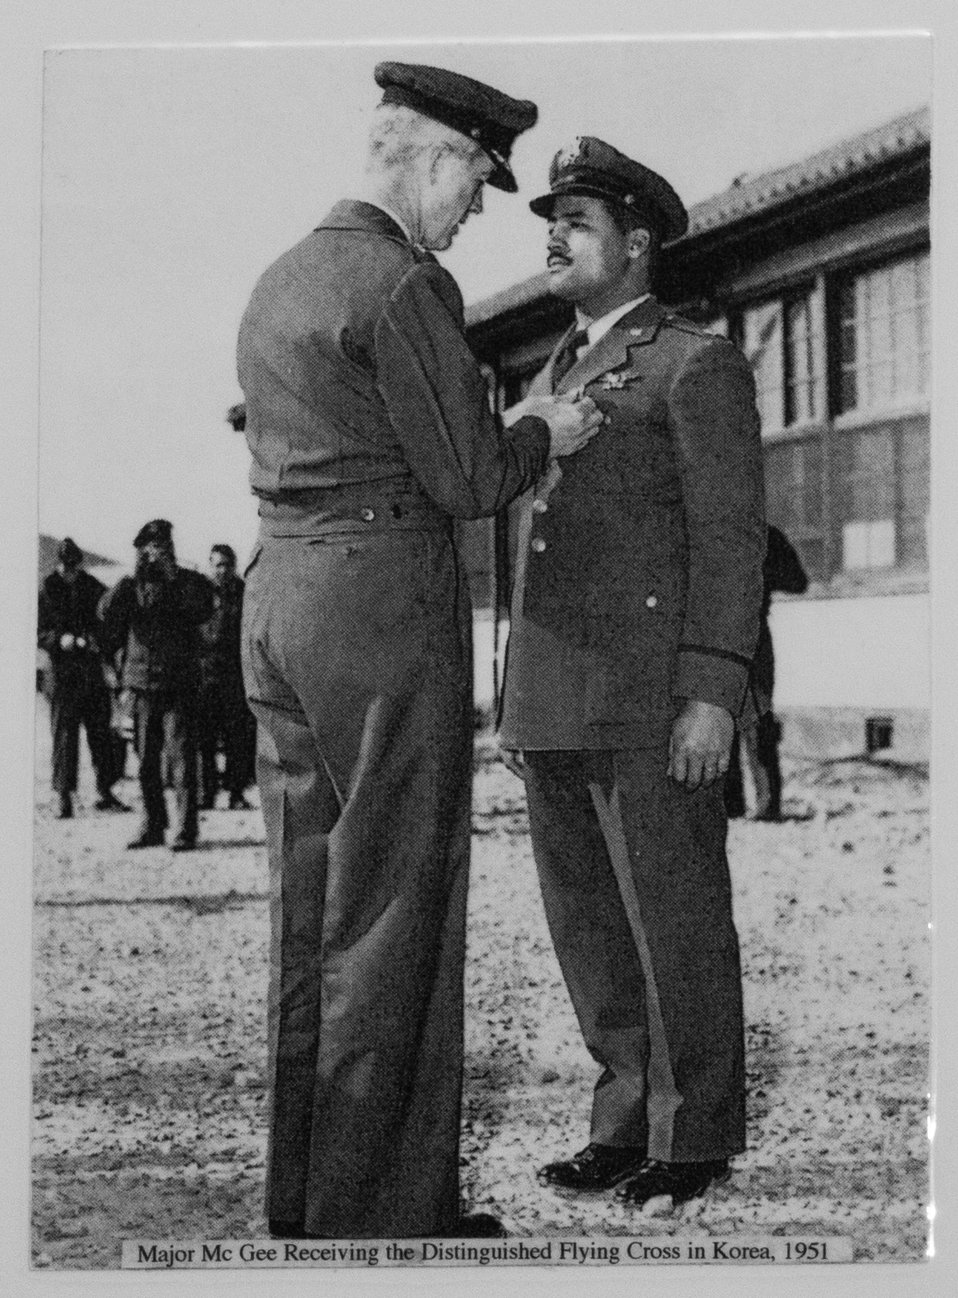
U.S. Air Force (USAF) photo of a young Major McGee receiving the Distinguished Flying Cross in Korea in 1951 is on display during the U.S. Department of Agriculture's (USDA) Office of the Assistant Secretary for Civil Rights (OASCR) event, “In conversation With Tuskegee Airmen,” held at USDA in Washington, D.C. on Thursday Mar. 27, 2014. Retired USAF Colonel Charles Edward McGee, Tuskegee Airmen Incorporated (TAI) National Historian William F. Holton and USAF Historical Research Agency Organizational Histories Branch Chief Daniel L Haulman were guest speakers at this event. Mr. Haulman presented the history of the first black military flying unit, then Col. McGee spoke about his Army Air Corp (later Army Air Force and Air Force) experiences starting in the 1940’s as did Mr. Holton with his perspective from the U.S. Navy. Questions from the audience provided several opportunities to open the discussion about civil rights challenges and how they achieved success and respect.